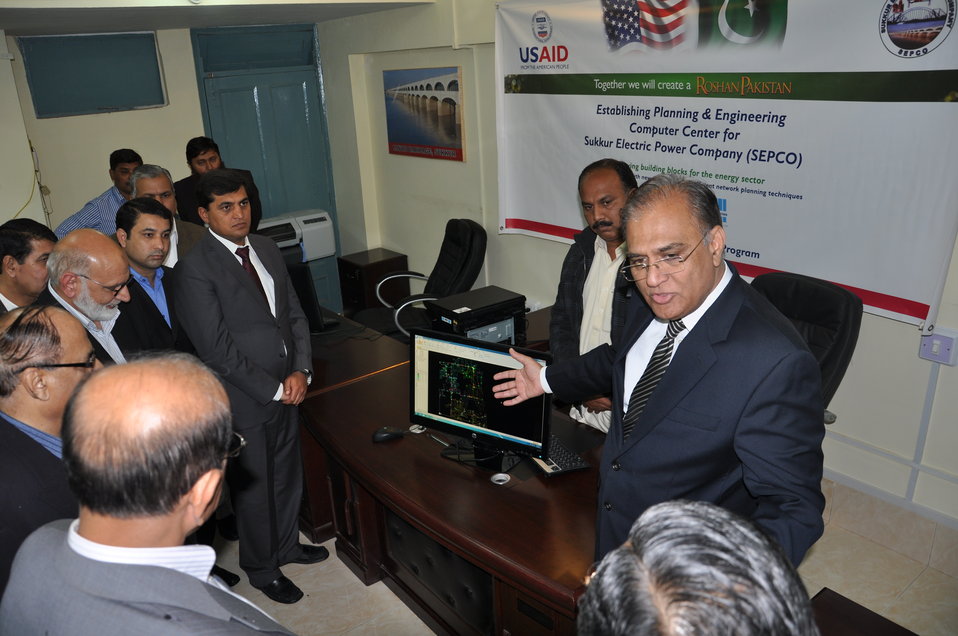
USAID provides State-of-the-Art Planning and Engineering Equipment to SEPCO

“It is a huge step towards helping Sukkur Electric Supply Company SEPCO grows as an independent Power Distribution Company in the region. I am confident that with this effort, SEPCO will now be able to better supply electricity to consumers in Sukkur.” Sukkur Electric Power Company, Chief Executive Officer

Sukkur is a newly created DISCO, and cateres to 150,000 customers. Unlike other DISCOs, SEPCO never had a Planning and Engineering (P&E) section in place, making it very unique. Consequently, for the first time, a P&E section has been established at SEPCO through USAID’s assistance.